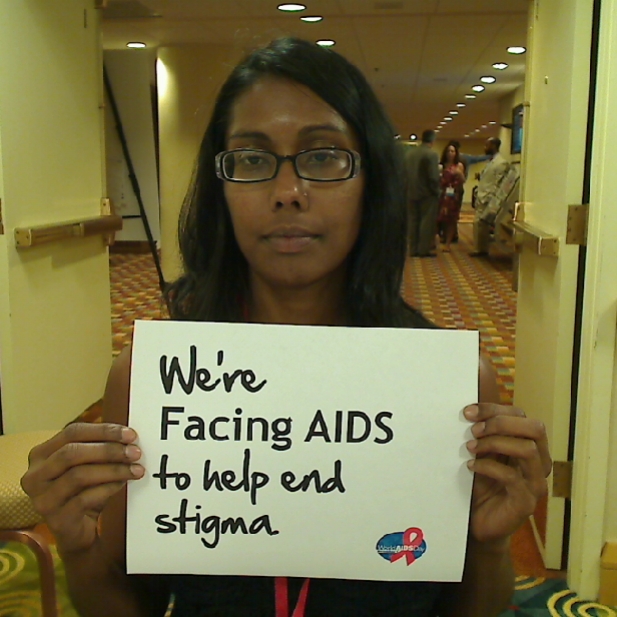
We're Facing AIDS to help end stigma.